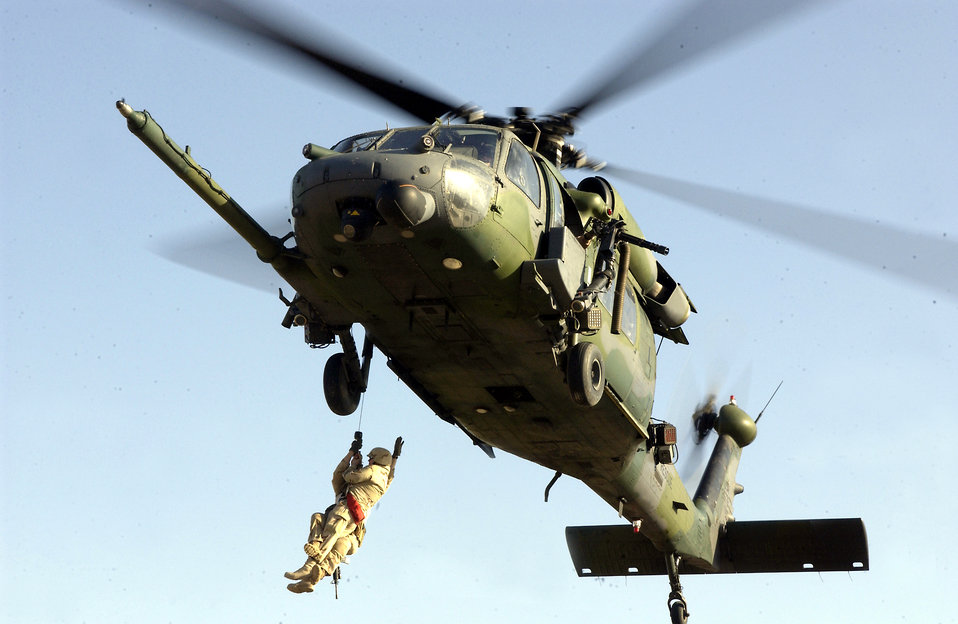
Need a raise?

BAGHDAD INTERNATIONAL AIRPORT, Iraq -- Staff Sgt. Gabriel Ruff uses a hoist to raise a